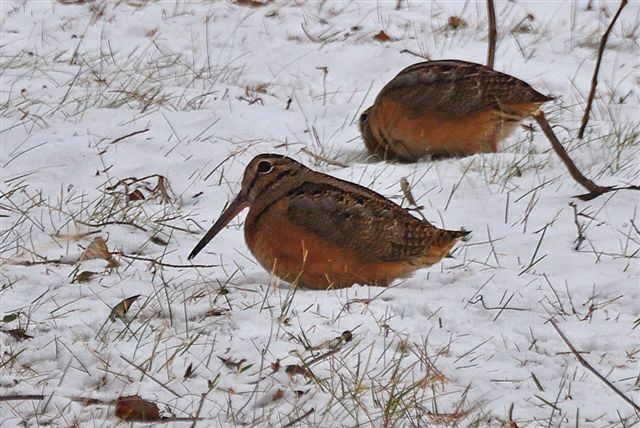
Photo of the Week - Woodcock at Ninigret National Wildlife Refuge, RI

Photo of the Week - 2/22/11

Woodcock at Ninigret National Wildlife Refuge in Charlestown, Rhode Island.